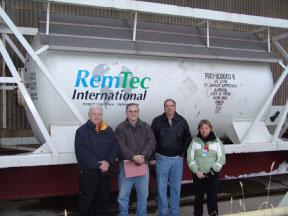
Refrigerant R-114 final shipment - Portsmouth

On March 10, 2008, the Office of Environmental Management completed the final shipment of approximately 90,000 pounds of excess Refrigerant R-114 from Portsmouth Gaseous Diffusion in Piketon, Ohio, to the Defense Logistics Agency. In the photo, left to right: Ross Bradley, EM-HQ; David Level, Oak Ridge; Robert Carwile, DOD/DLA; Patricia Burns, RemTec International.